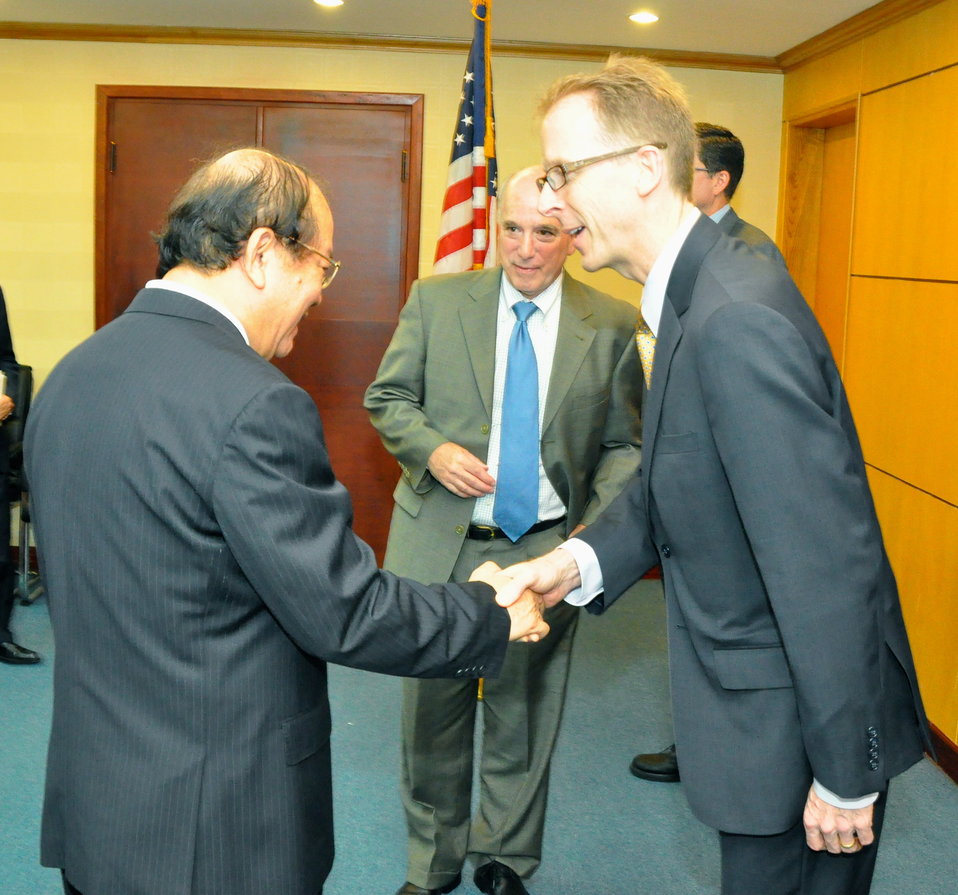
Deputy Minister Bui Cach Tuyen, Ministry of Natural Resources and Environment greets USAID Mission Director Joakim Parker at the Seventh U.S.-Vietnam Advisory Committee Meeting (JAC)

Hanoi, September 20, 2012